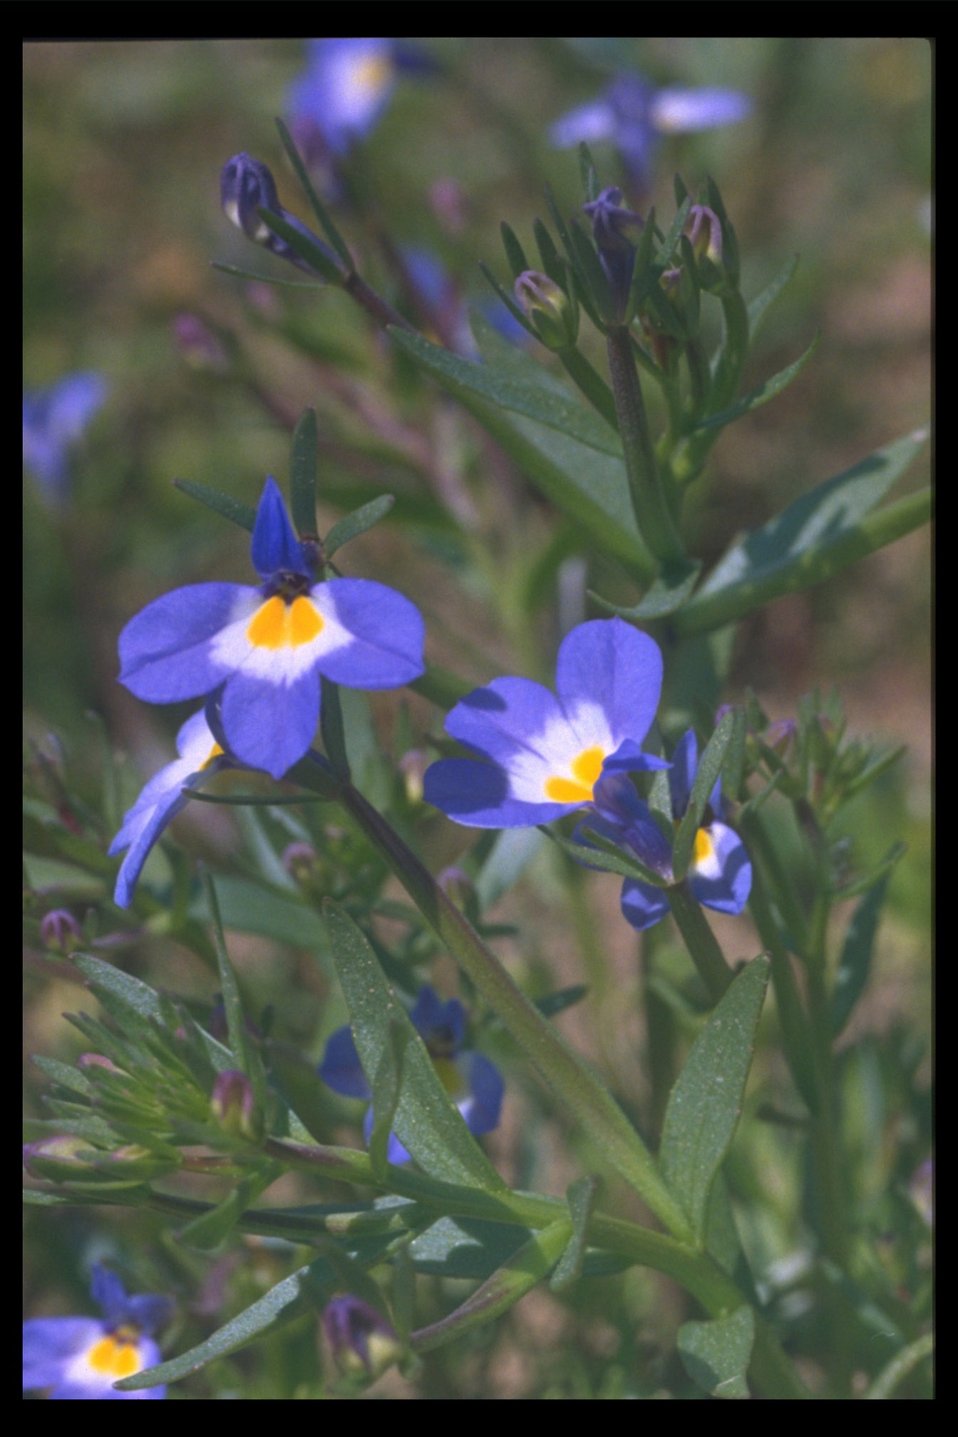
The Cascade Downingia, also called the Calico-Flower (Downingia yina) located at the Upper Table Rock.